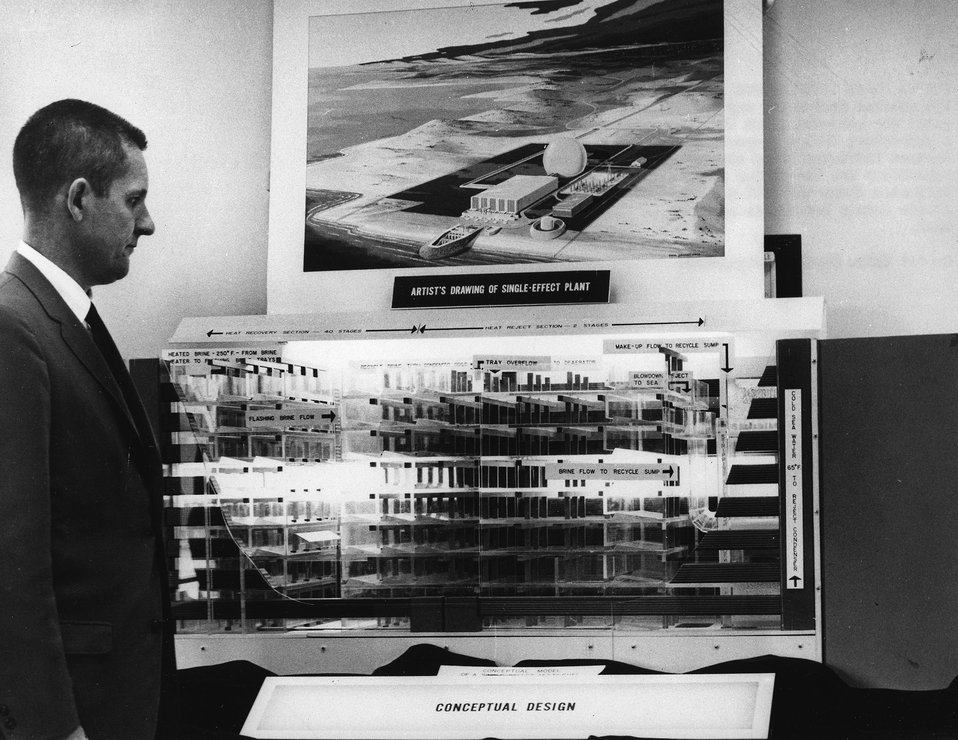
A scale model of a 250 million gallon per day multiflash desalination plant for converting sea water to fresh water - A conceptual design prepared by the Oak Ridge National Laboratory for the Office of Saline Water. c. 1966